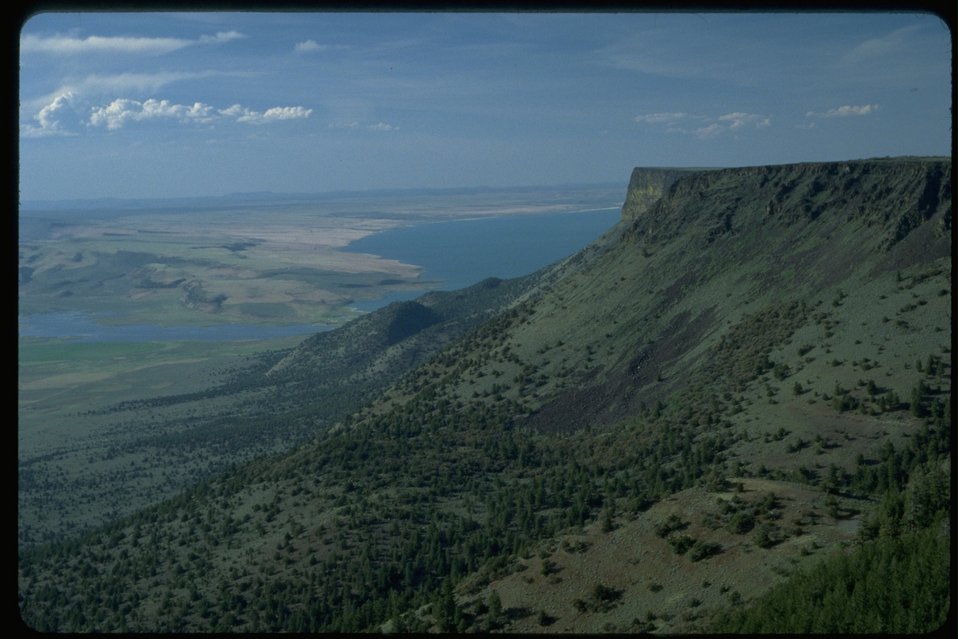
Abert Rim, view from Forest Service Hang Glider Site.